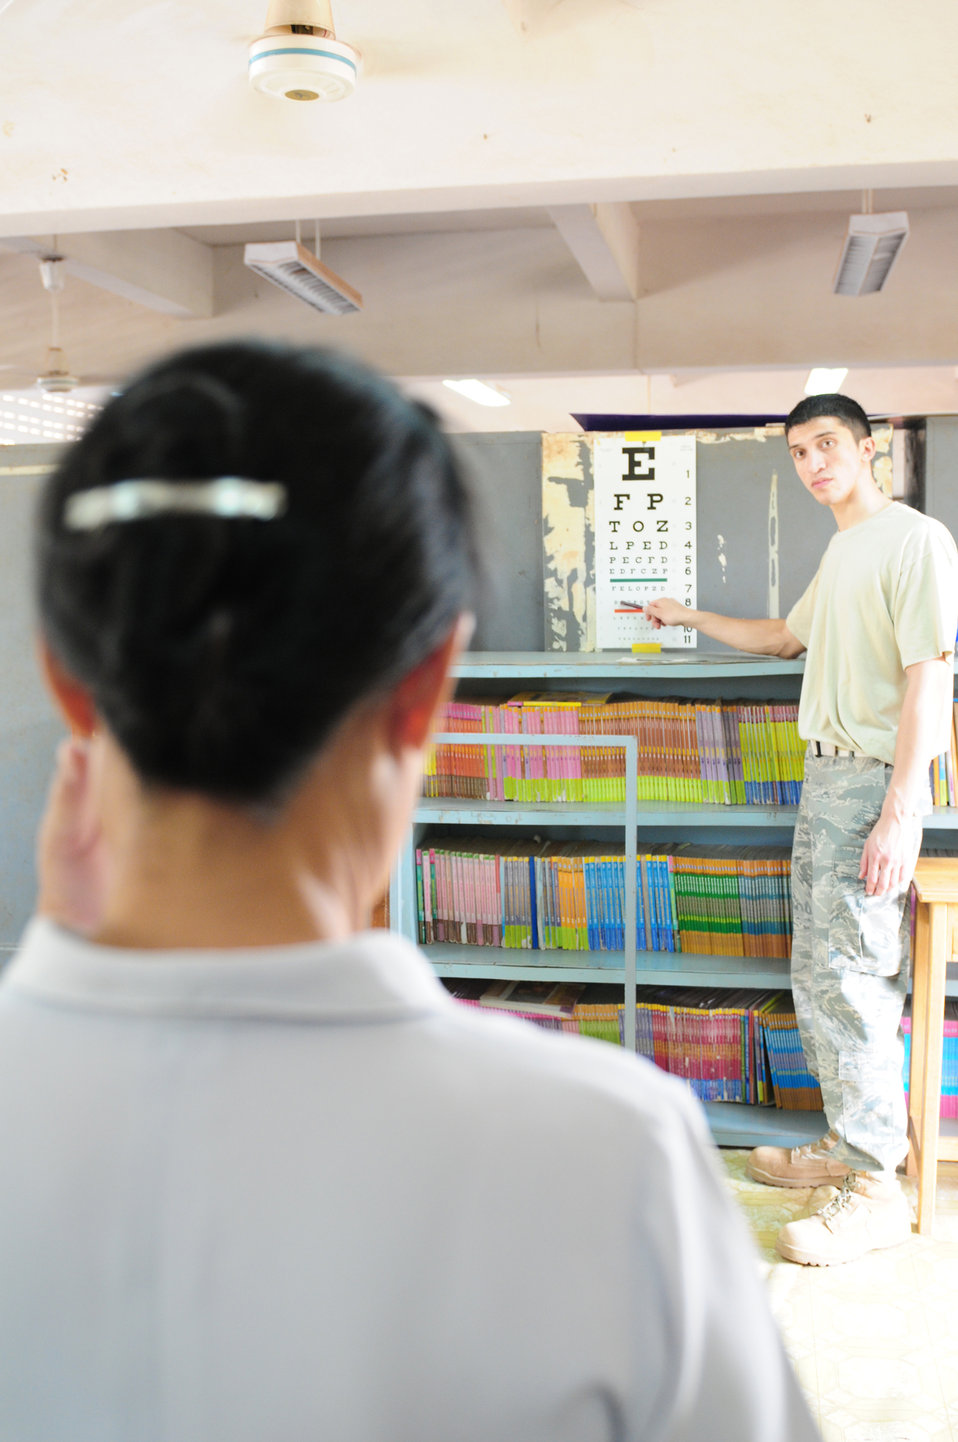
Multilateral team helps more than 1,500 Thai residents

Staff Sgt. Marvin Gutierrez assists a woman with her initial eye exam during a Cope Tiger 2010 medical civic assistance project March 9, 2010, in Thailand. Sergeant Gutierrez is assigned to the 36th Medical Group at Andersen Air Force Base, Guam.